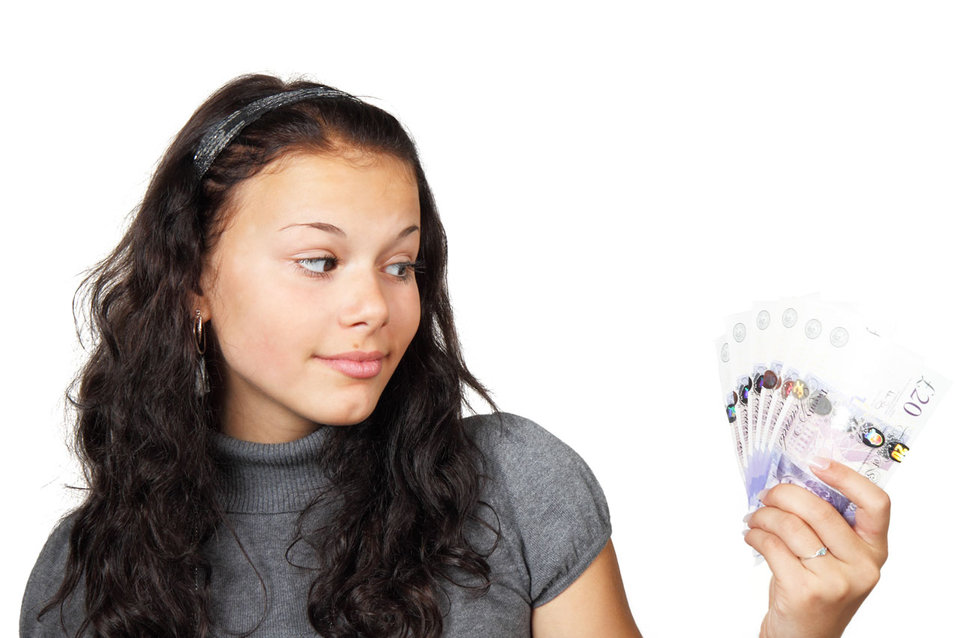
Teenager with money

Young woman wondering what she should do with money.